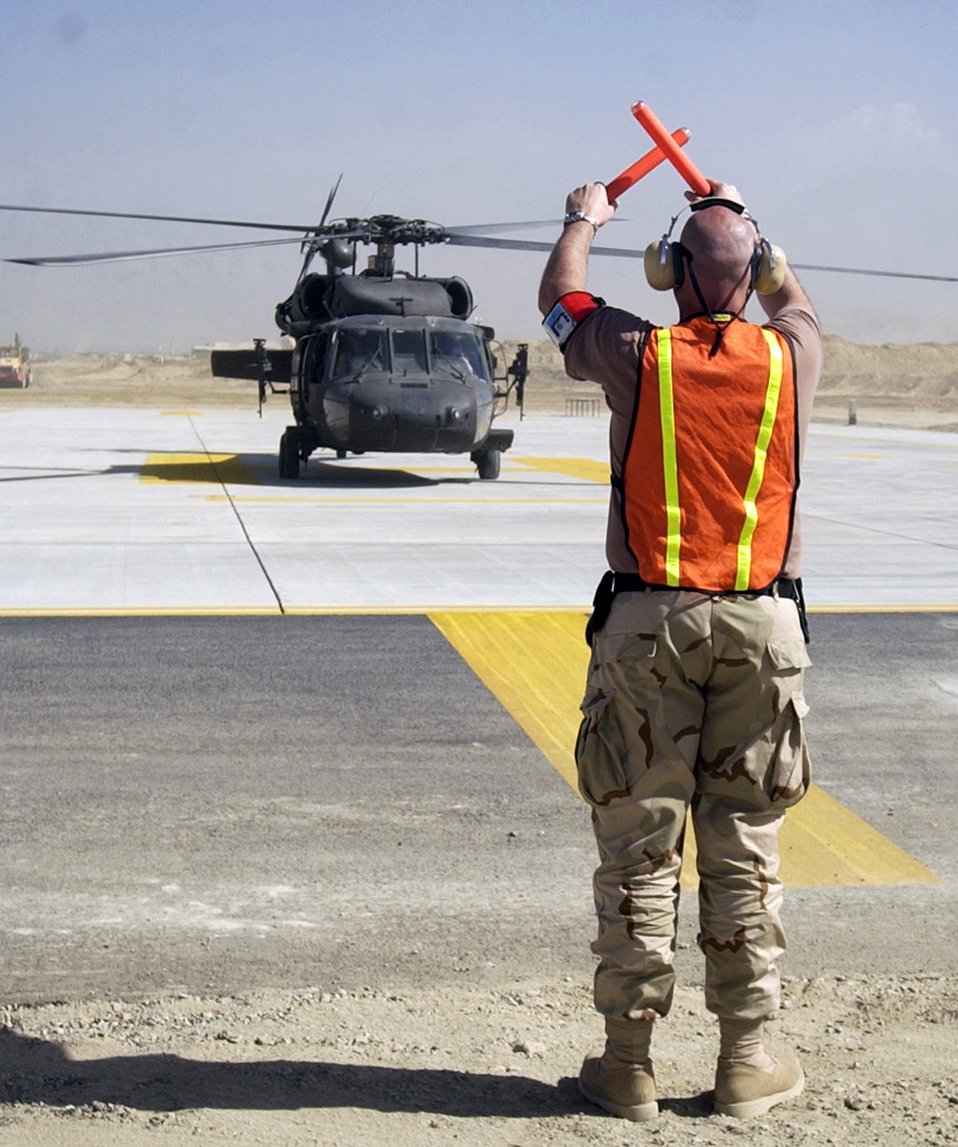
New ramps provide Bagram increased airpower capability

Master Sgt. Jamie Cabral helps land an International Security Assistance Force helicopter on the new ramp Sept. 27 at Bagram Air Base, Afghanistan. The new ramp, one of two new ones officially opened Sept. 27, will bring significant new capability for air support of coalition forces. Sergeant Cabral is a transient alert quality assurance evaluator for the 455th Air Expeditionary Wing.